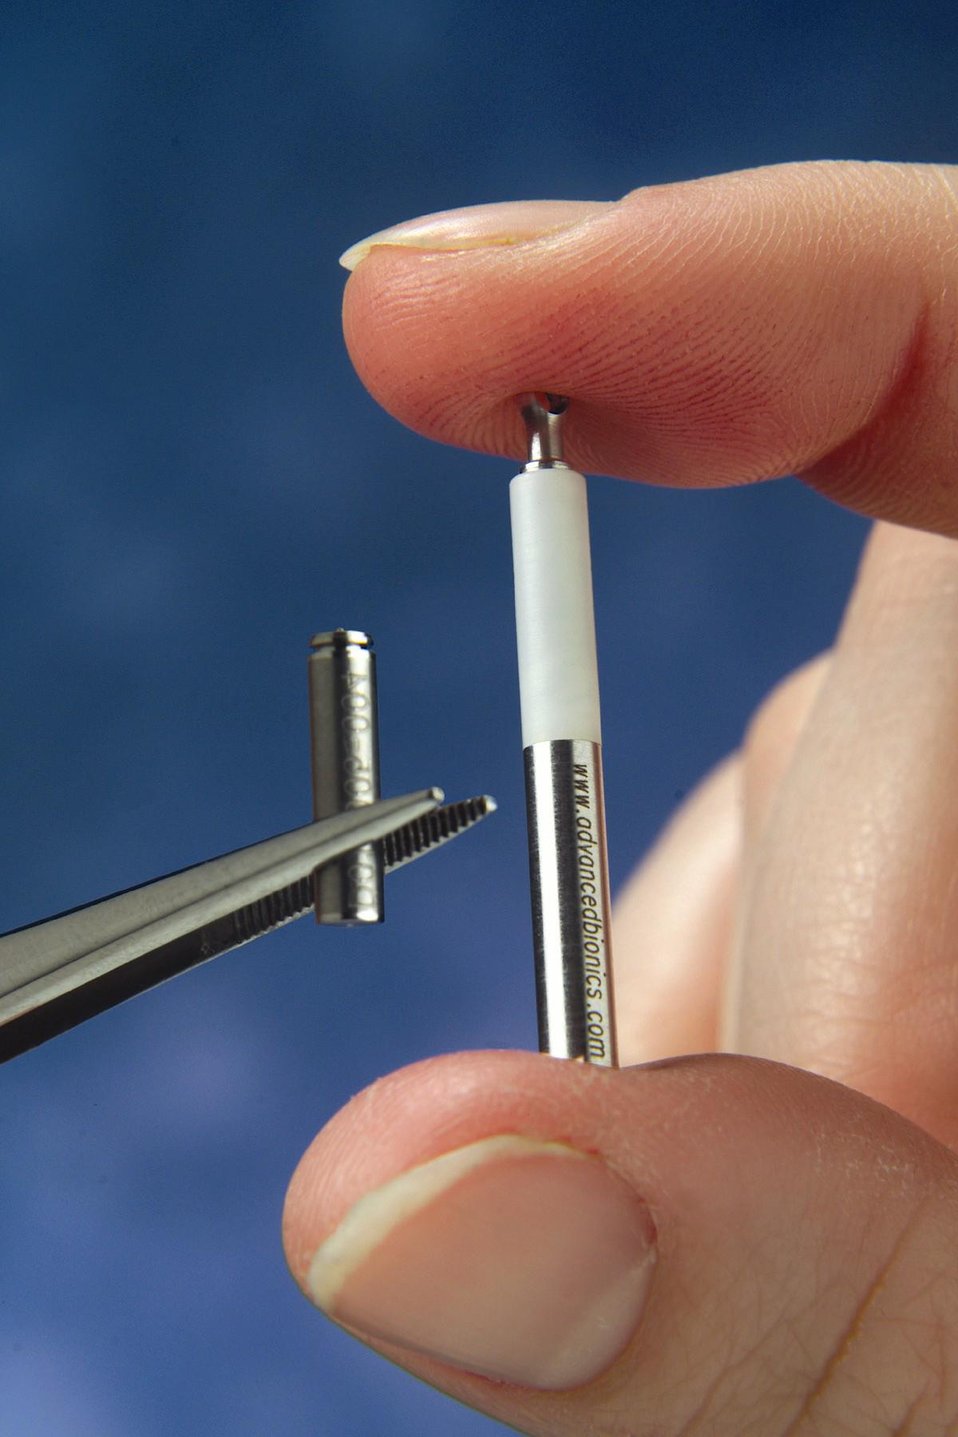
CLOSE UP VIEW OF A BION (BIONIC NEURON DEVICE) WITH A MINIATURE BATTERY.

THE BIONIC NEURON DEVICES OR BIONS CAN BE IMPLANTED NEAR NERVES WHERE THEY EMIT ELECTRICAL MICROPULSES THAT STIMULATE NEARBY MUSCLES AND NERVES TO HELP SUFFERERS OF ATROPHIED OR DYSFUNCTIONAL MUSCLES. THE STRENGHT AND FREQUENCY OF THE STIMULATION CAN BE PROGRAMMED FROM OUTSIDE THE BODY, AND THE TINY BATTERIES CAN BE RECHARGED WIRELESSLY WITH AN ELECTRICAL FIELD. DEVELOPERS INCLUDE ARGONNE, QUALLION LLC AND ADVANCED BIONICS CORP.